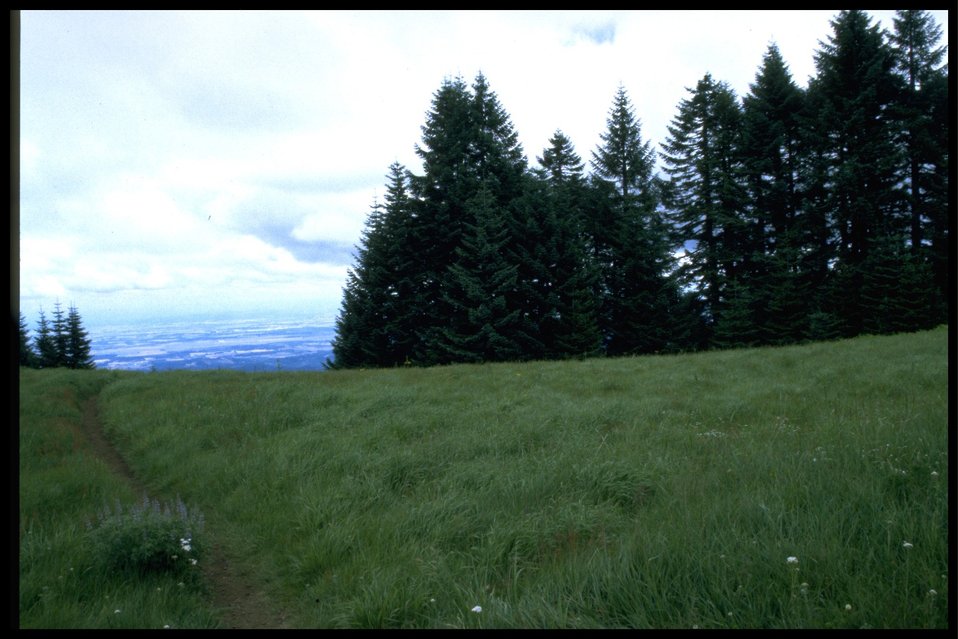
Scenic view from Mary's Peak.